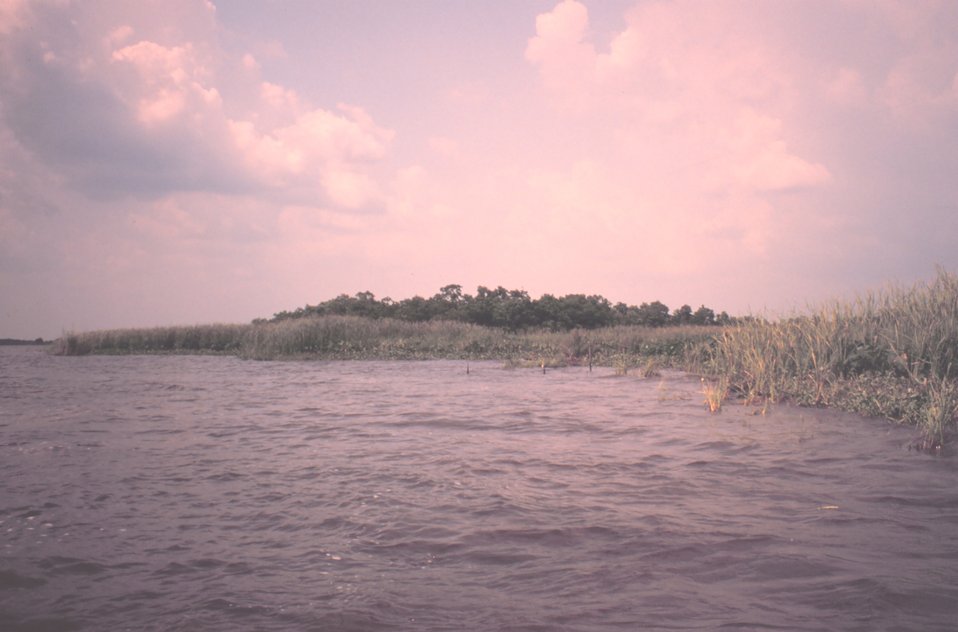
Marsh surrounding tree-covered hummock